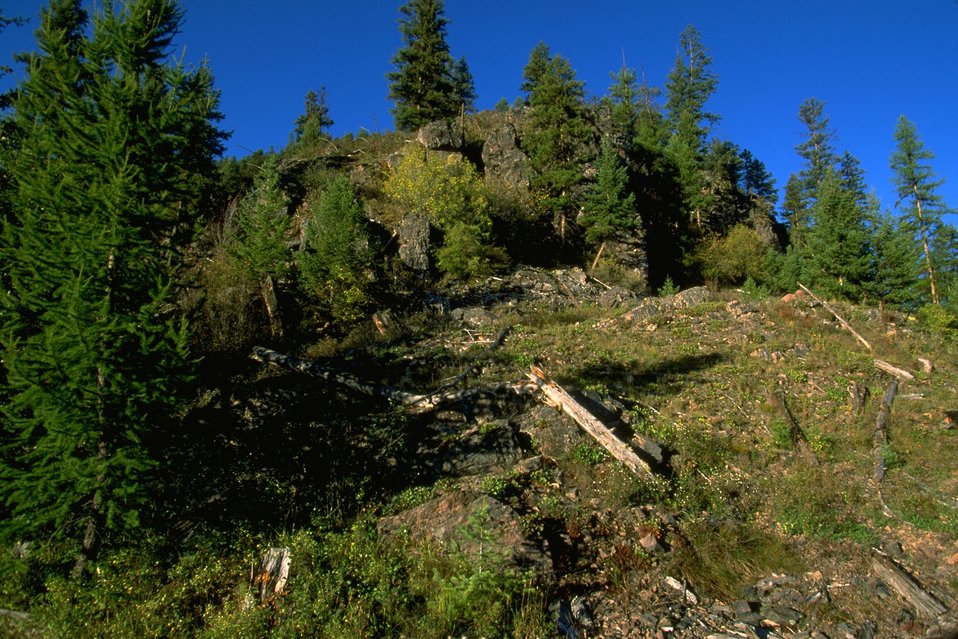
Timber on a rocky slope